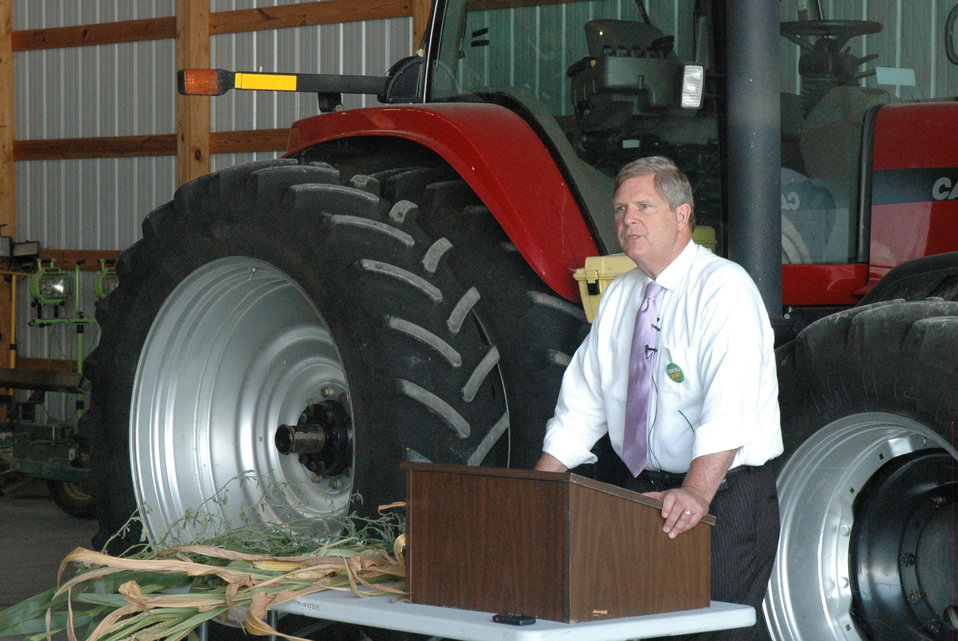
Agriculture Secretary Tom Vilsack met with producers, industry and business leaders in Prairie City, Iowa on Tuesday, July 24, 2012 to discuss the ongoing drought and USDA's efforts to assist producers.

As of July 20, the U.S. Department of Agriculture has designated 1,055 counties across the country as disaster areas due to drought. According to the most recent U.S. Drought Monitor report, 88 percent of our nation's corn and 87 percent of our soybeans are in drought-stricken areas.